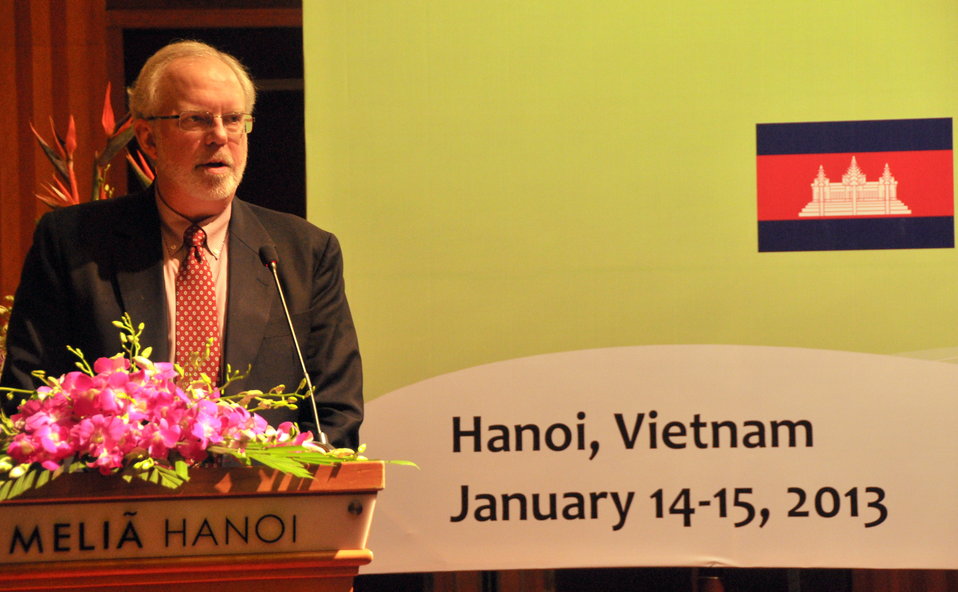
U.S. Ambassador David B. Shear addresses the Lower Mekong Initiative Infrastructure Best Practices Exchange in Hanoi

Hanoi: January 14, 2013